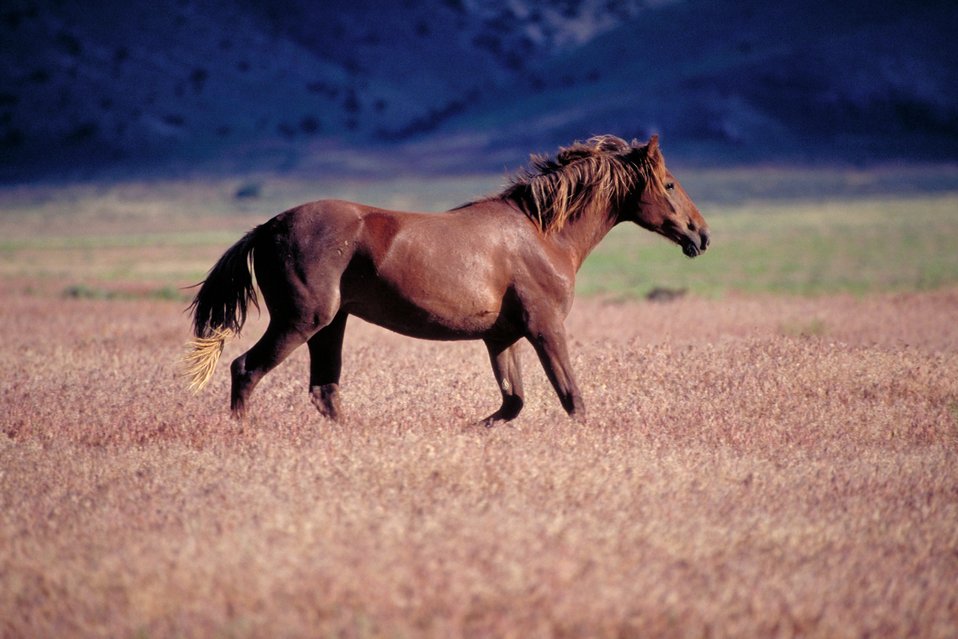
Onaqui Herd near Dugway, Utah.